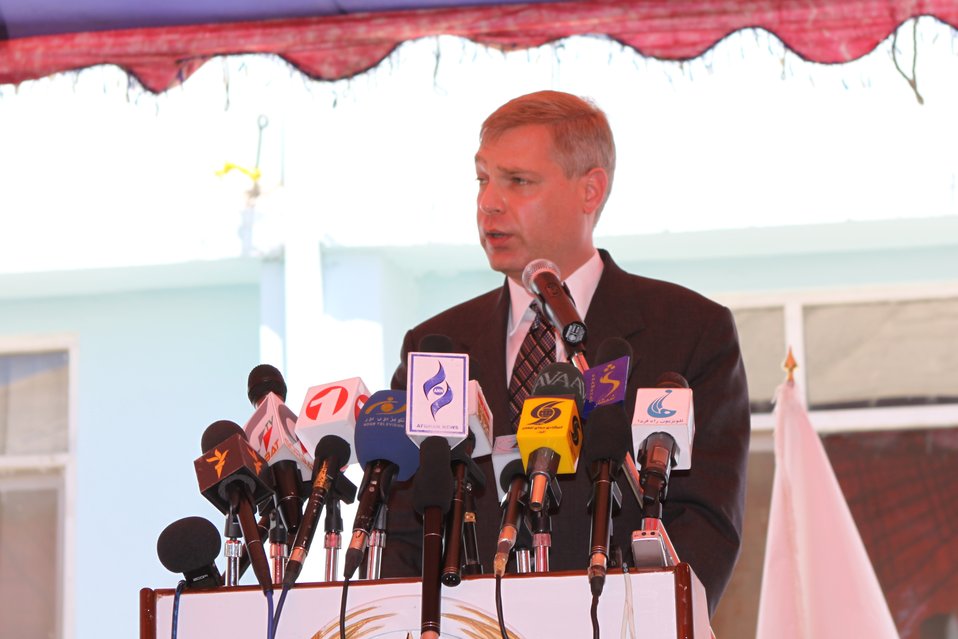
100522 ATVI Graduation 106